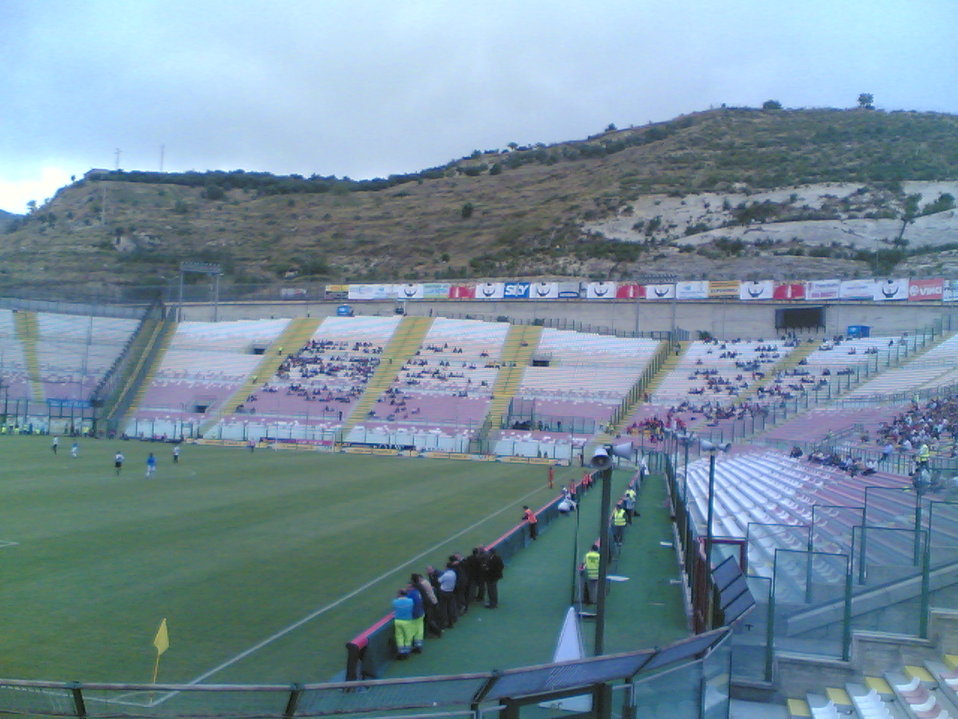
Dettaglio Curva Nord,spicchio ospiti e un pezzo della tribuna B del SanFilippo